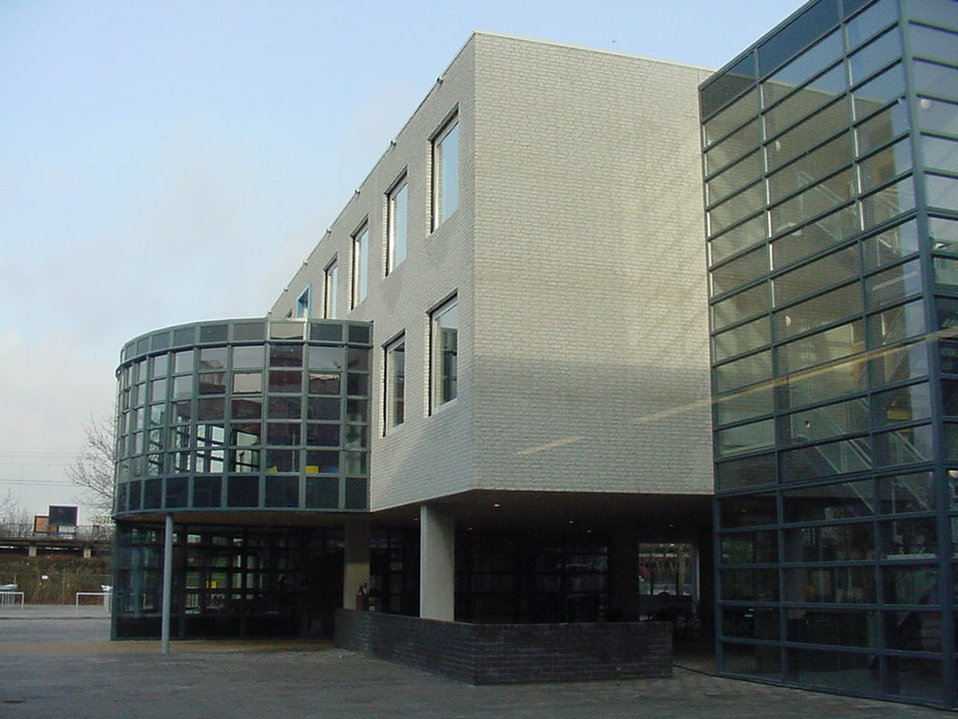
Nederlands: Nieuwe (Tweede Fase) gebouw van het Ds. Pierson College.